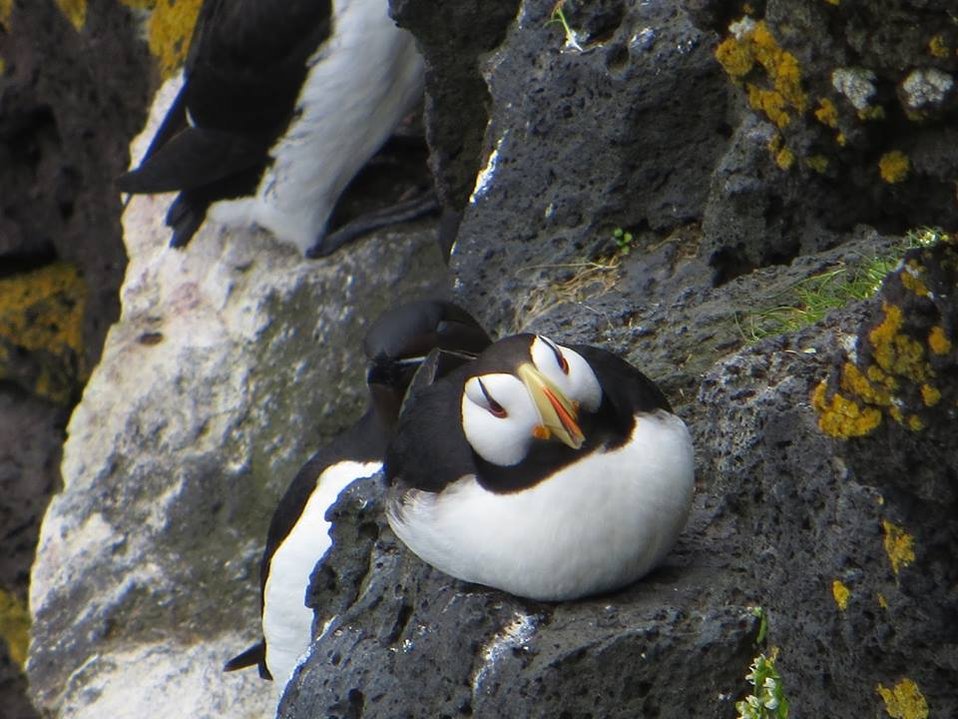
Horned puffin

Alaska Maritime National Wildlife Refuge.